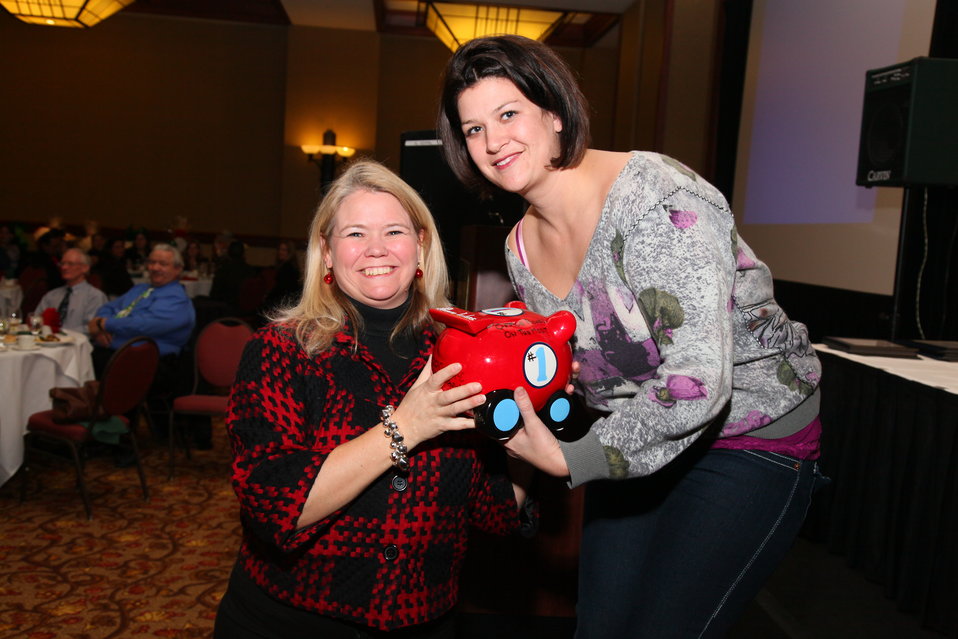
Sacramento District Holiday Party 2011